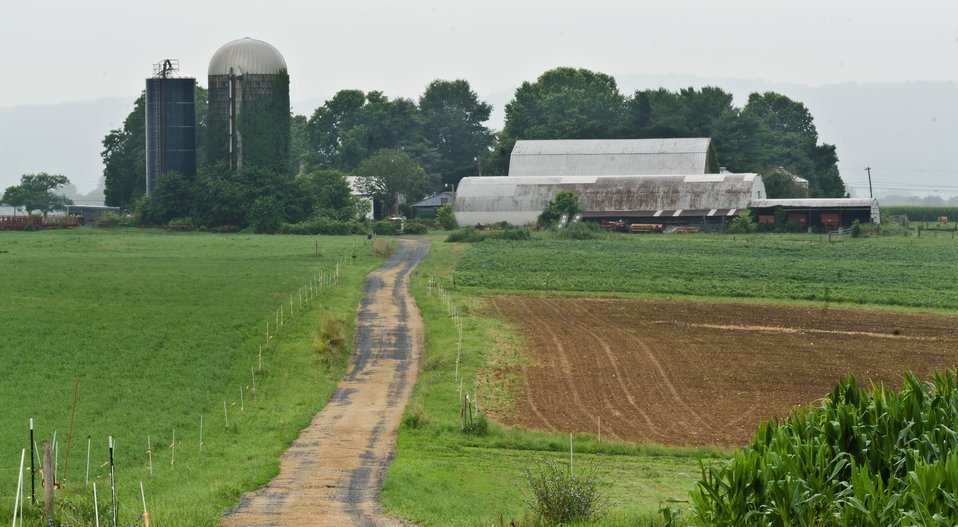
Nick’s Organic Farm, in Adamstown, MD, on Friday, July 12, 2013. The farm, owned by Nick Maravell, produces Black Angus beef, chicken, turkey, eggs, hay, soybeans, corn, alfalfa, orchard grass, rye; and other crops. The cattle are100% grass-fed receiving certified organic pasture, certified organic hay (in winter), water and mineral salts mixed with sea kelp. The cattle are not fed hormones, antibiotics or animal products. Poultry feed from grain is ground from organic grain. The poultry also graze on organic pastures. The farm has conducted on-farm research with federal, state and non-profit agencies to refine organic practices.